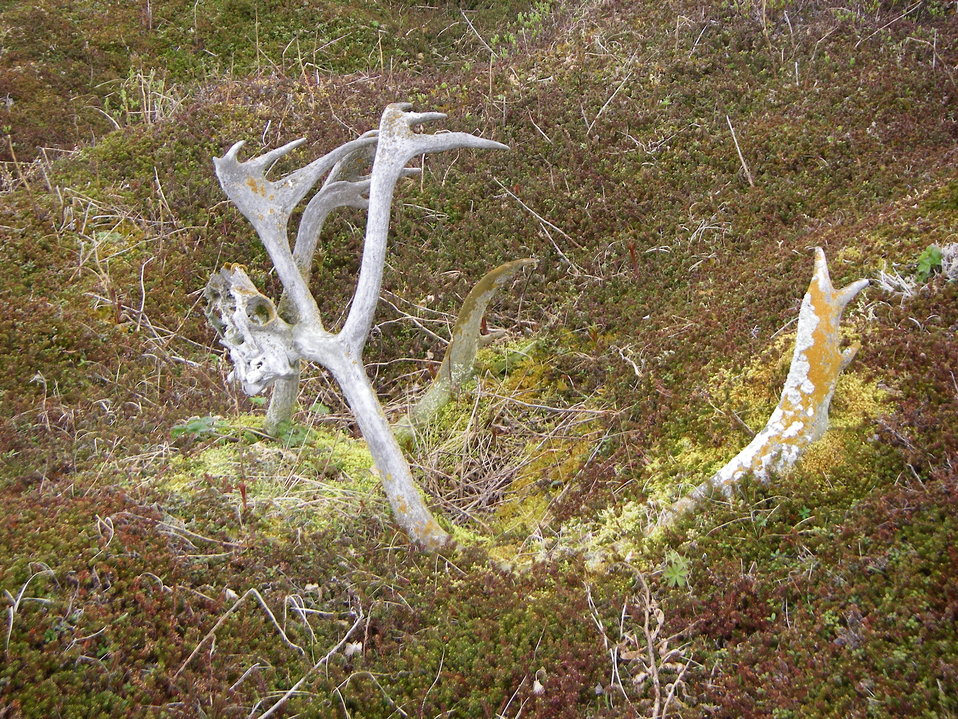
Caribou antlers

Wilderness, Izembek National Wildlife Refuge
Photo by Kristine Sowl,
USFWS, Public Domain